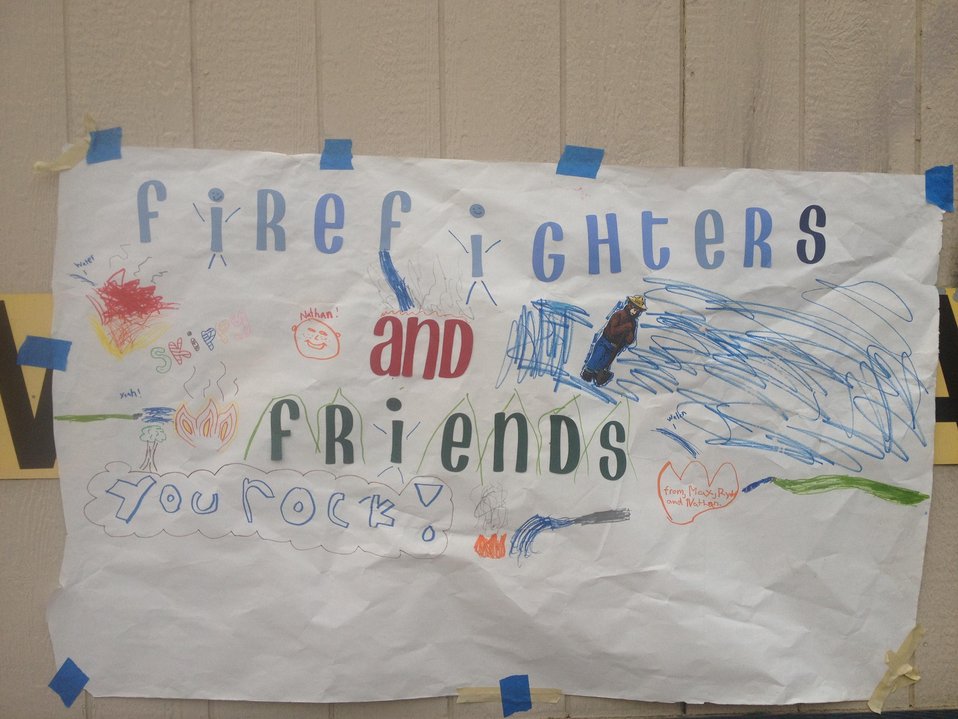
A thank you poster from a local children’s camp is posted at the Incident Command Center for all the firefighters of the Aspen Fire in the Sierra National Forest to view. The Aspen Fire in the Sierra National Forest near Big Creek, CA began on Jul. 22, 2013 by lightning and has consumed approximately 1, 400 acres and is approximately 20% contained.